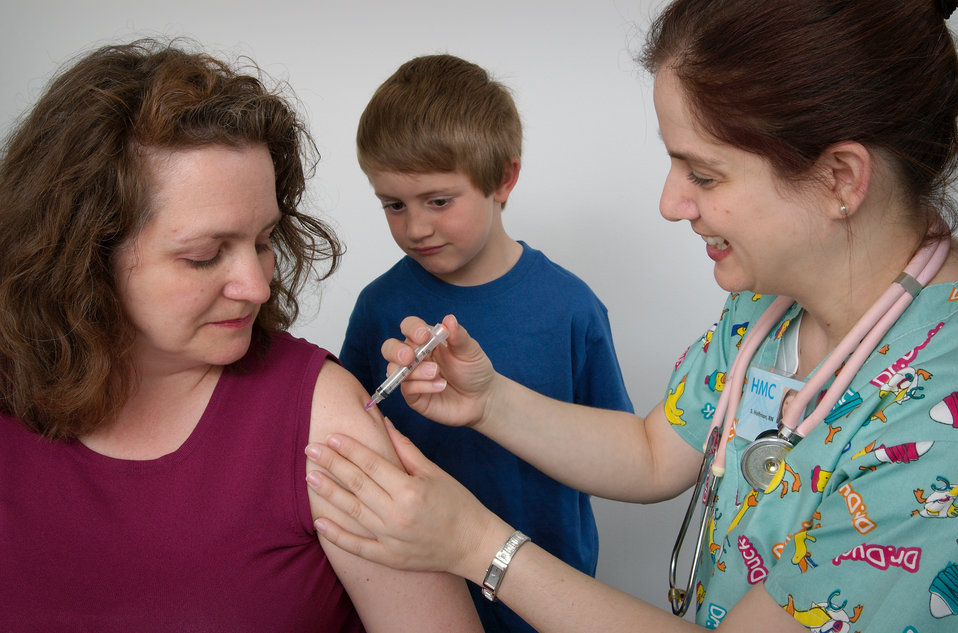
With her young son observing from behind, this 2006 photograph showed a nurse in the process of administering an intramuscular vaccination in the left shoulder muscle of this mother.